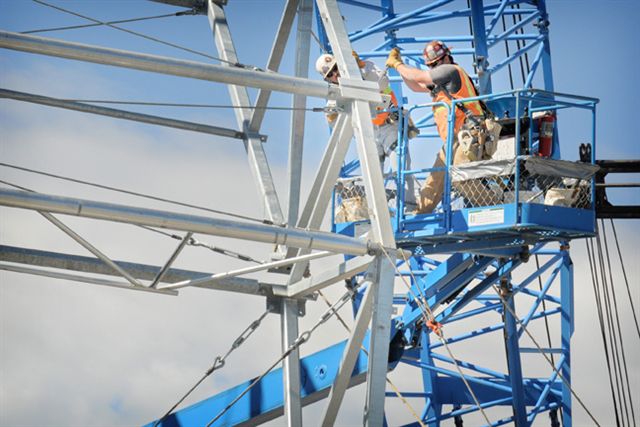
RAN ARP RWMC S123 ARPVI STEELERECTION 070610 P6558-008 A